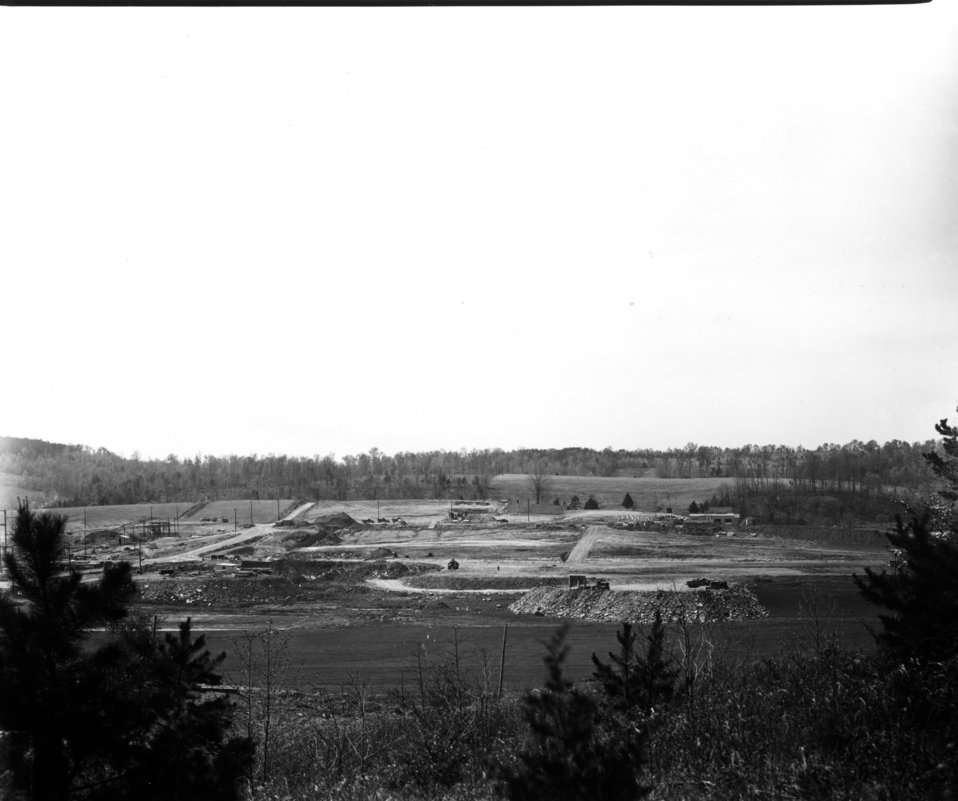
X-10 at Oak Ridge